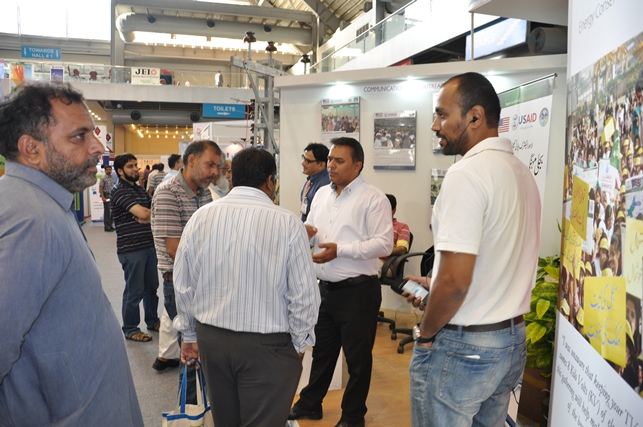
USAID participates in 11th International Pakistan Oil Gas Energy Exhibition

Visitors at the communications and outreach stall